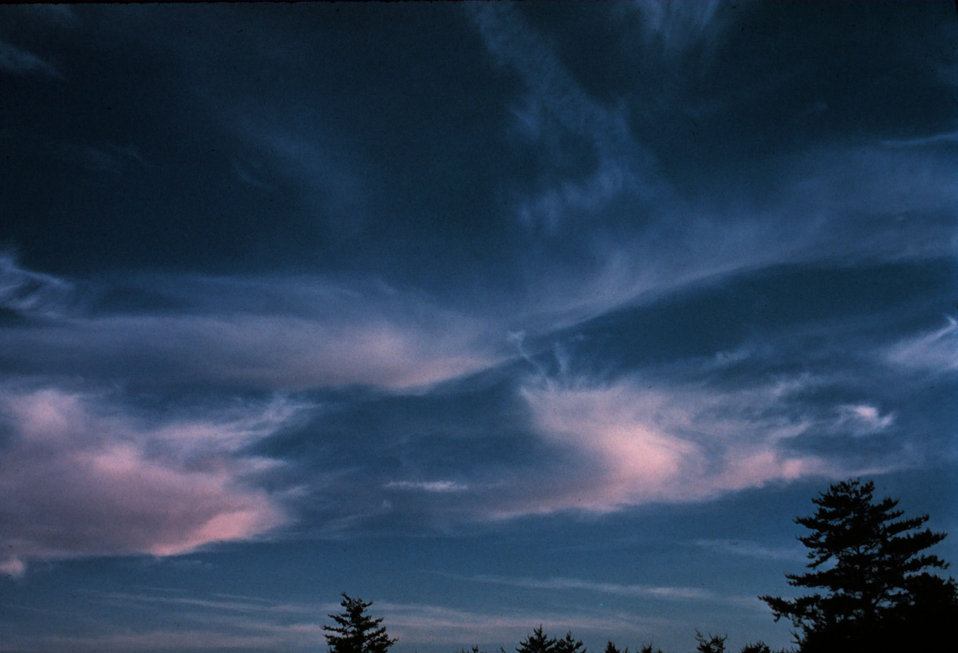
Cirrus Clouds